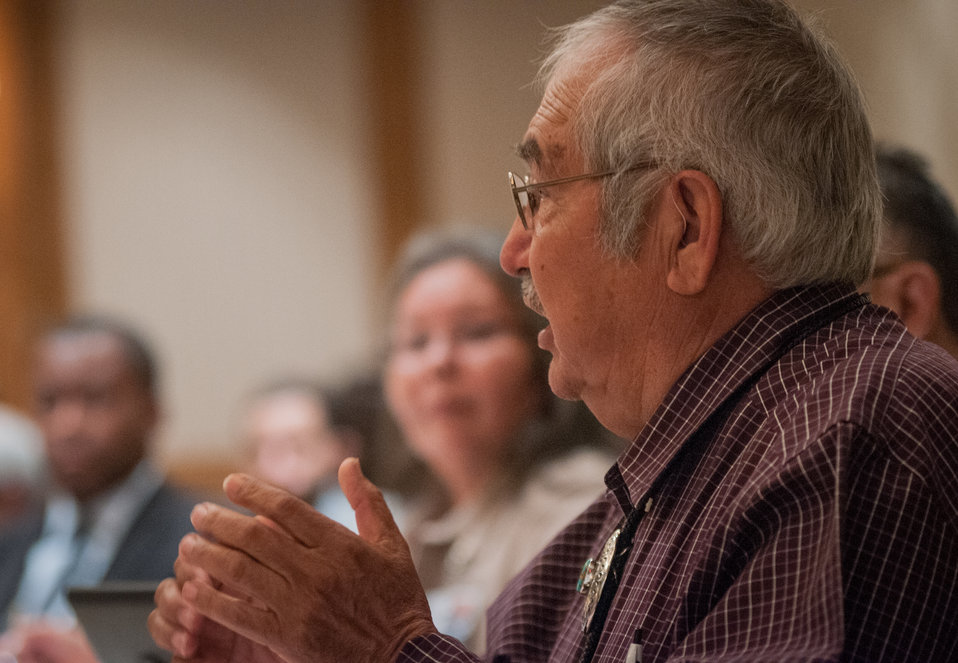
Rancher of the Navaho Nation in Shiprock, NM Gilbert Harrison, right, presents some ranching concerns, to Agriculture Secretary Tom Vilsack, during the U.S. Department of Agriculture's (USDA) Council for Native American Farming and Ranching (CNAFR) meeting, on Monday, Sep. 9, 2013 at the L'Enfant Plaza Hotel, in Washington, D.C. CNAFR was created to advise the Secretary on ways to eliminate barriers to participation for Native American Farmers and Ranchers in USDA programs. The Council was established as part of the Keepseagle settlement, and is conducted under the oversight of USDA's Office of Tribal Relations, which is part of the Office of the Secretary of Agriculture. Also in attendance is The Director of Tribal Relations Leslie Wheelock, Agriculture Assistant Secretary for Civil Rights Joe Leonard, Jr. Ph.D., Farm Services Administration Administrator Juan M. Garcia and Deputy Administrator for Farm Loans Programs Chris Beyerhelm.